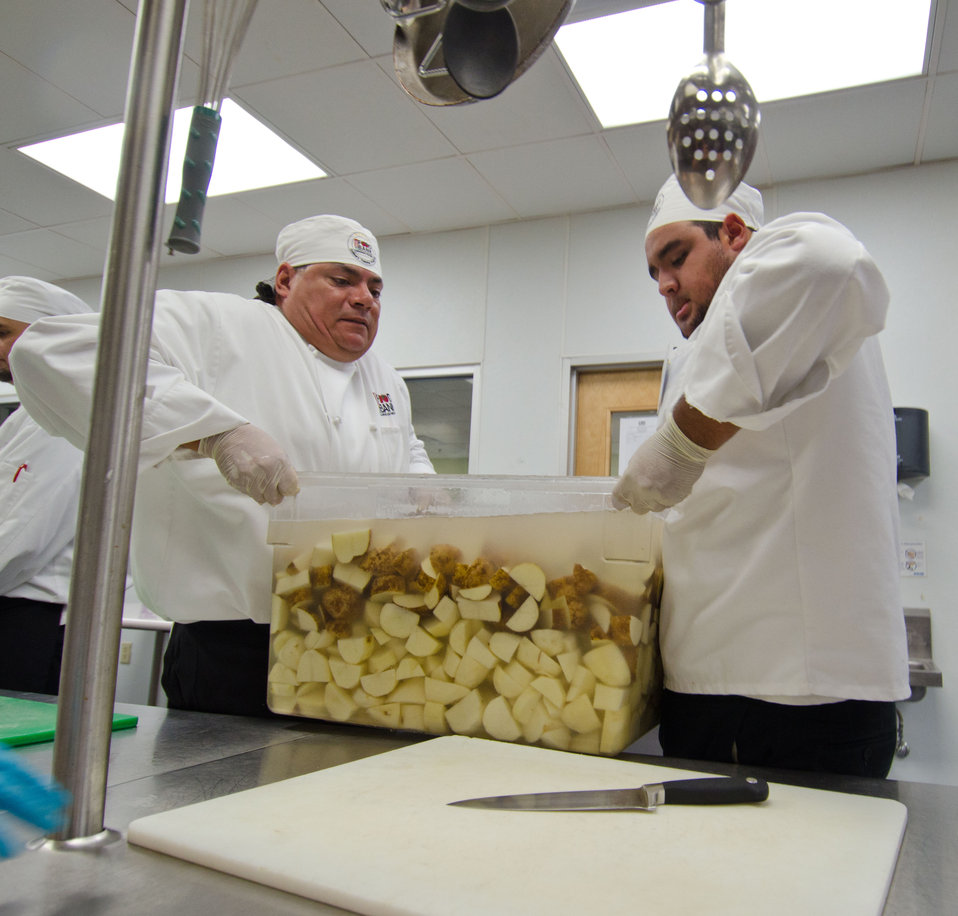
The San Antonio Food Bank (SAFB) Community Kitchen students Sergio Baiz (right) and Ed Rivas (left) lift a tub of potatoes that will be cooked and mashed for Kids Cafe meals being prepared by Community Kitchen Class 35, in San Antonio, TX, on Monday, October 31, 2011. Other meals prepared by the Community Kitchen include the U.S. Department of Agriculture (USDA) Summer Food Service Program for children during summer months, and the year-round Child and Adult Care Feeding Program (CACFP). The Community Kitchen trains the unemployed, feeds the hungry, and generates public support and revenue through social enterprise. They began creating meals in 2003, with volunteers and the Community Kitchen students looking to further themselves in a promising culinary career. Over 16-week course individuals receive basic culinary training, similar to portions of an accredited culinary institution, to develop their culinary job skills. The program is lead by Chef Rudy Garza and his team of instructor chefs, present training and work demands that build useful job skills. The students focus their new talents on the preparation of meals for area shelters, kids cafes, summer feeding sites (www.summerfood.usda.gov/), and catering services. The San Antonio Food Bank is a non-profit organization that serves as a clearinghouse by receiving and storing truckloads of donated food, produce, and other grocery. SAFB distribute these items to over 500 service agencies that help people in need.
“We couldn’t do what we do without our partnership with USDA’” said President and CEO Eric Cooper. He continues, “We are privileged in partnering (with the USDA) to feeding kids, through the summer, with the Summer Food Service Program, and throughout the year, with the Child and Adult Care Feeding Program (CACFP). Then in our approach to feeding seniors, we partner with USDA in the Commodities Supplemental Food Program (CSFP), and the Senior Farmer’s Market (Nutrition) Program. And then work to bring all our (needy) parties together with our Supplemental Nutrition Assistance Program (SNAP) Outreach. You know, once families have access to food we believe it is important to educate them. Through the support of the SNAP-Education Program we are able to educate them during their time of need. With this comprehensive approach we are really able to get the right food, at the right amount, at the right time, to needy families throughout our community – which allows us to feed the fifty-eight thousand we do, each week.”
SAFB serves 16 counties in Southwest Texas and states, “Nearly one out of every four children and one out of every five adults in Southwest Texas lives in poverty and has difficulty meeting basic nutritional needs.” According to SAFB, sixty-five percent of the people requesting emergency food have children. “Additionally, the senior citizens and those living on a fixed income generally have limited funds for a consistent grocery budget.”
San Antonio is the seventh largest city in the nation with surrounding farms and ranches near its rivers and water supplies. When available they provide fresh surplus produce. Other commodities come from the food industry and manufacturers. The major food brand companies that for various reasons have surplus commodities donate it to SAFB.
The United States Department of Agriculture donates commodities through programs such as The Emergency Food Assistance Program (TEFAP), while Texas farmers supply fresh produce to their Fresh Produce Program.
Public donations come in the form of money, food, volunteer time, and advocacy. Their fleet of trucks to pickup and deliver food as needed.